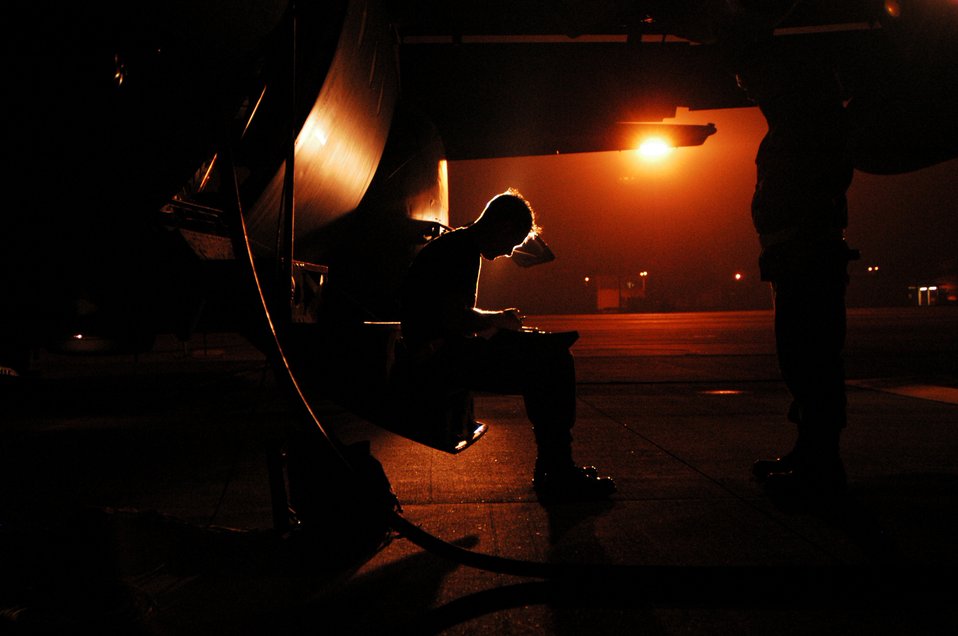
Check lists

YOKOTA AIR BASE, Japan -- A flightline maintenance crewmember goes through a pre-flight checklist for a C-130 Hercules in the early morning during a Keen Sword exercise here recently. Keen Sword tests the crew's maneuverability during cargo drops and enemy evasive actions.